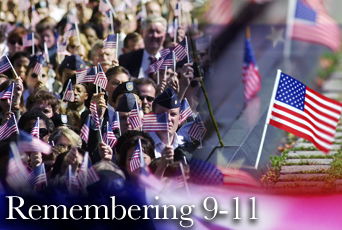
Remembering 9-11

Since Sept. 11, 2001, the Air Force has been continuously called upon to help preserve the nation's way of life and defeat the threat of terrorism. Now, six years later, the Air Force has nearly 40,000 active duty, Guard and Reserve Airmen deployed to more than 20 countries across the globe, supporting the war on terrorism.